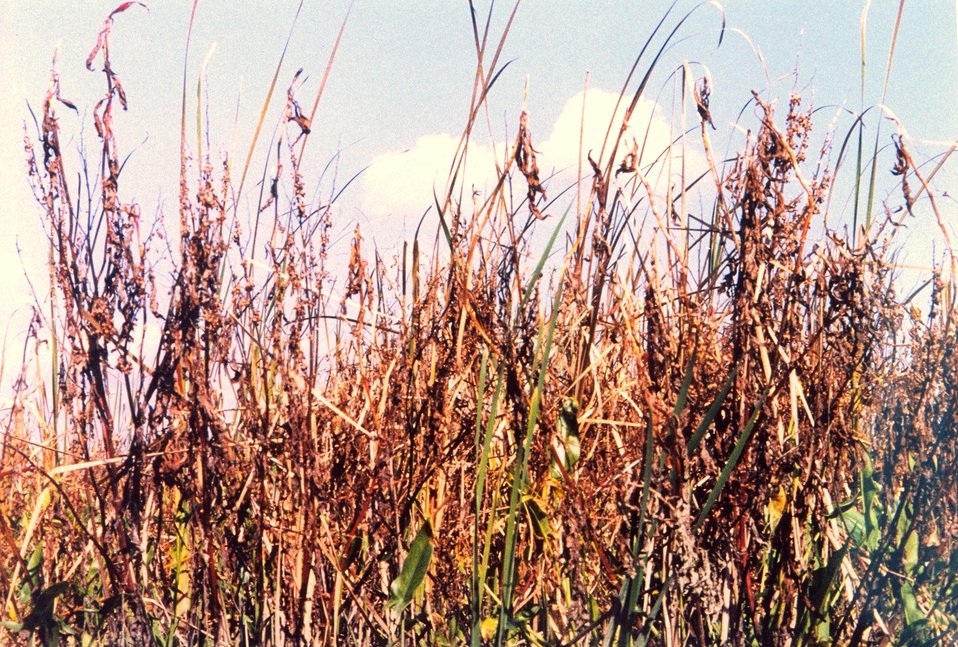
Unidentified vegetation.